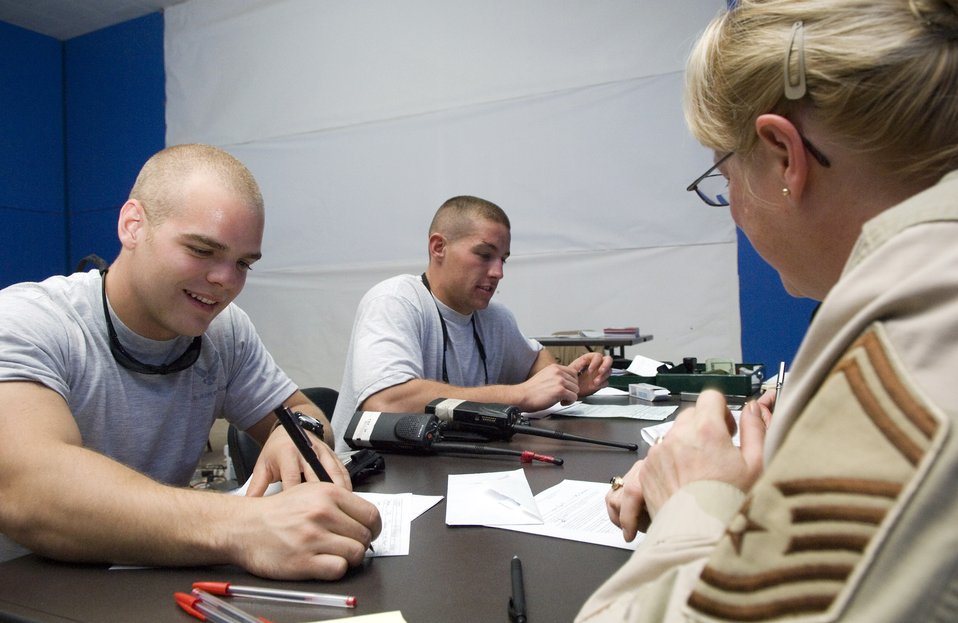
Embassy visits Balad, helps Airmen, Soldiers get passports

Senior Master Sgt. Veronica Martin reviews paperwork with Airmen 1st Class Richard Jones(center) and Ryan Larson before filing for their first passports. The Airmen took advantage of the U.S. Department of State Foreign Service office visit, which allowed them to file for passports while deployed. The Airmen are deployed from Aviano Air Base, Italy, and are both assigned to the 332nd Expeditionary Civil Engineer Squadron Fire Department. Sergeant Martin is the 332nd Air Expeditionary Wing Law Office superintendent.